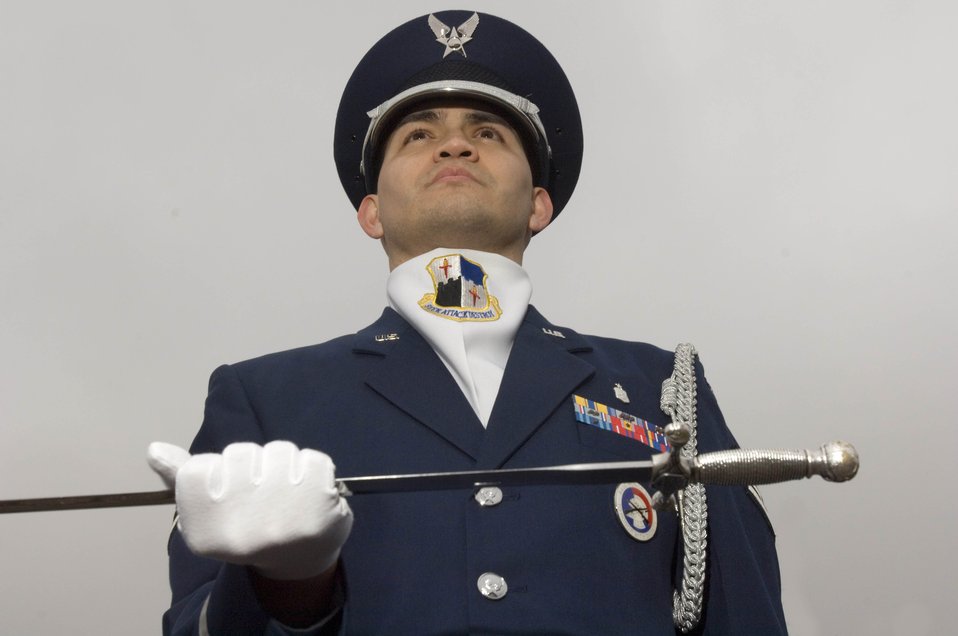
Airmen toss sabers to honor comrades

Staff Sgt. Ernesto Otero holds a saber during practice at Spangdahlem Air Base, Germany, on Tuesday, March 21, 2006. Sergeant Otero is a nutritionist with the 52nd Aerospace Medical Squadron.